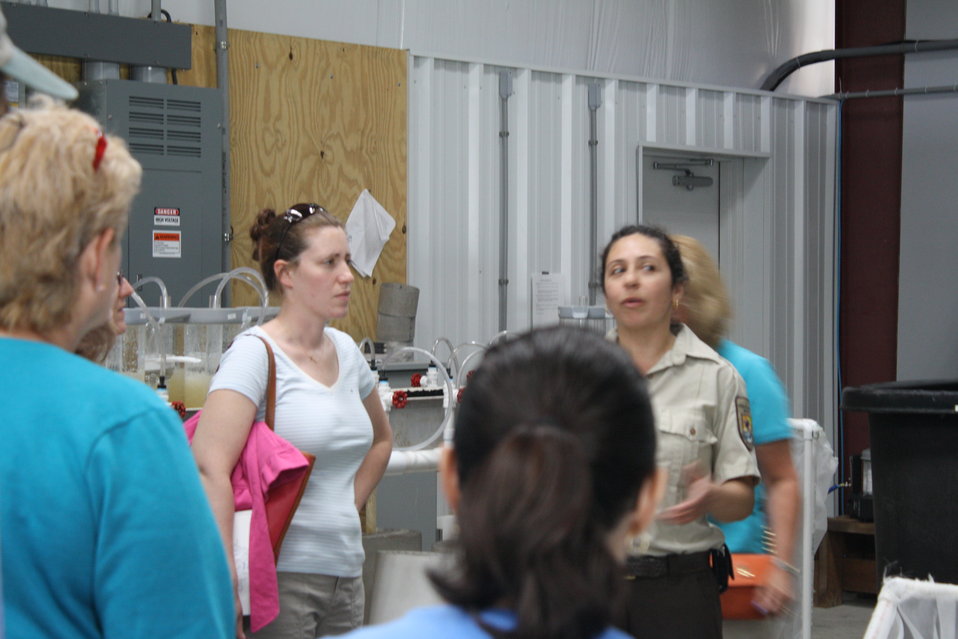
Nashua National Fish Hatchery welcomes regional office employees